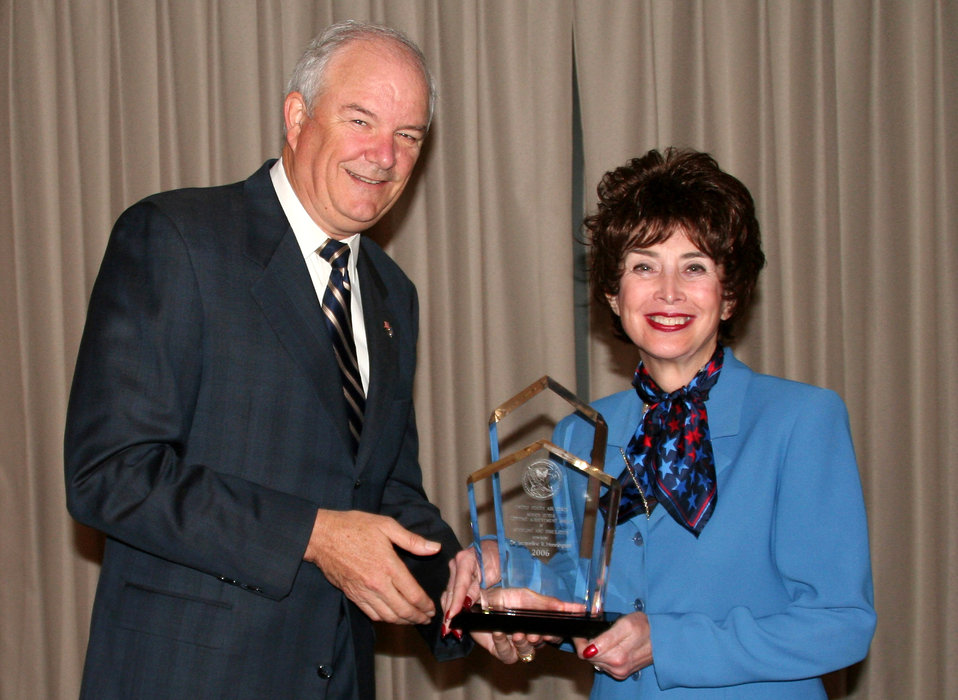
Moody Suter Lifetime Achievement Award

Secretary of the Air Force Michael W. Wynne presents the Air Force Modeling and Simulation Moody Suter Lifetime Achievement Award to Dr. Jacqueline R. Henningsen, director for Air Force studies and analyses, assessments and lessons learned.